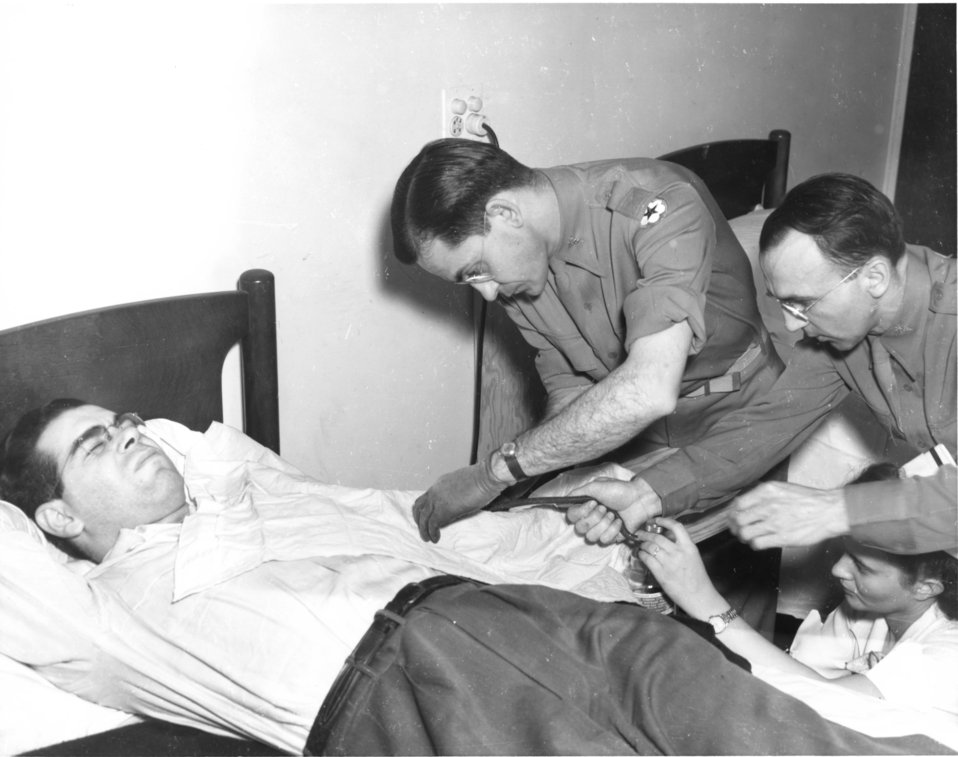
Medical at Oak Ridge